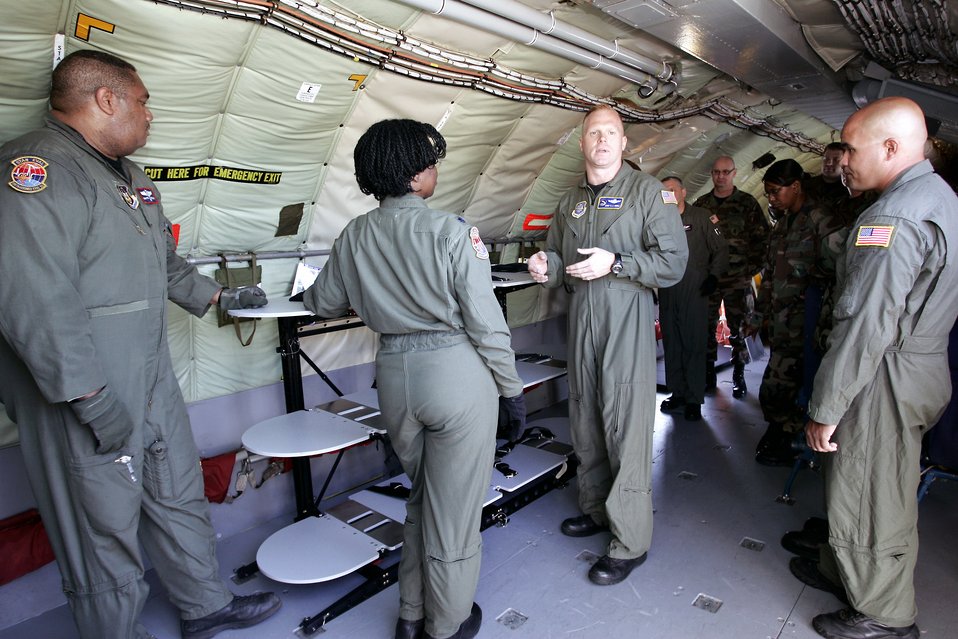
Air Mobility Battlelab's lightweight litter system initiative yields promising results

Master Sgt. Chris Sidoli (center) works with KC-135 Stratotanker aircrew members during a demonstration for the stacking litter system initiative June 22 at McGuire Air Force Base, N.J. The versatile and portable system will allow a more flexible aeromedical evacuation system. Sergeant Sidoli works at the Air Mobility Battlelab. The aircrew members are from the 108th Air Refueling Wing at McGuire AFB. The Air Mobility Battlelab is located in the U.S. Air Force Expeditionary Center on Fort Dix, N.J.